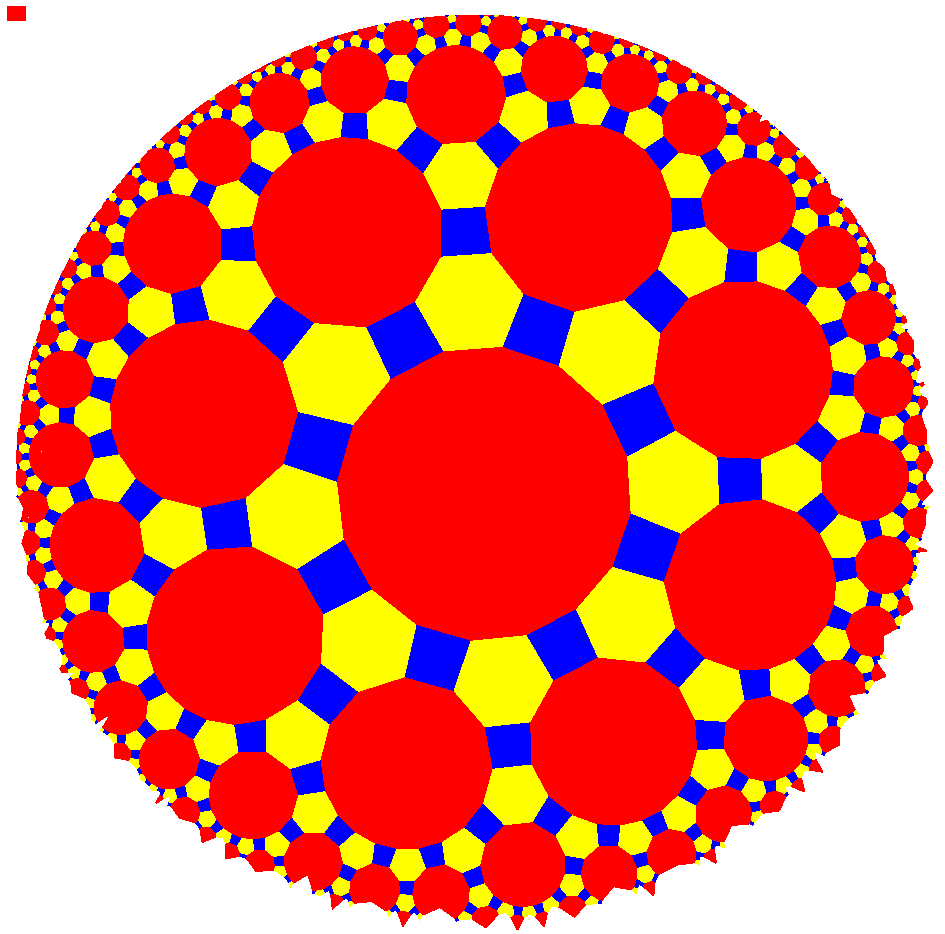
Hyperbolic plane regular tiling: t0,1,2{8,3 }